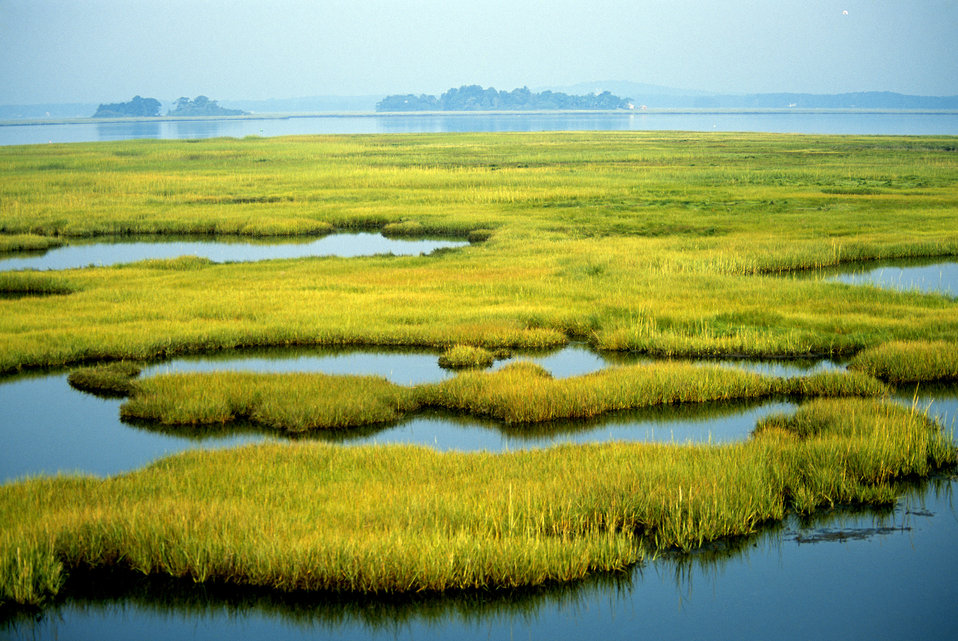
Photo of the Week - Coastal Wetlands (MA)

Photo of the Week - 10/8/12

Coastal Wetlands at Parker River National Wildlife Refuge in Newburyport, MA.